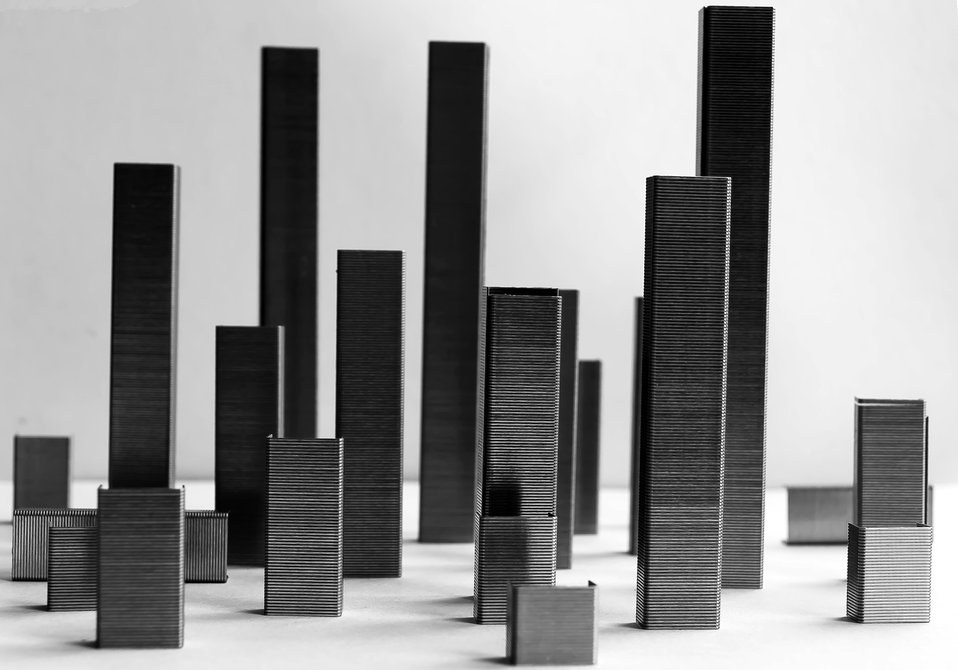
City - imaginary.